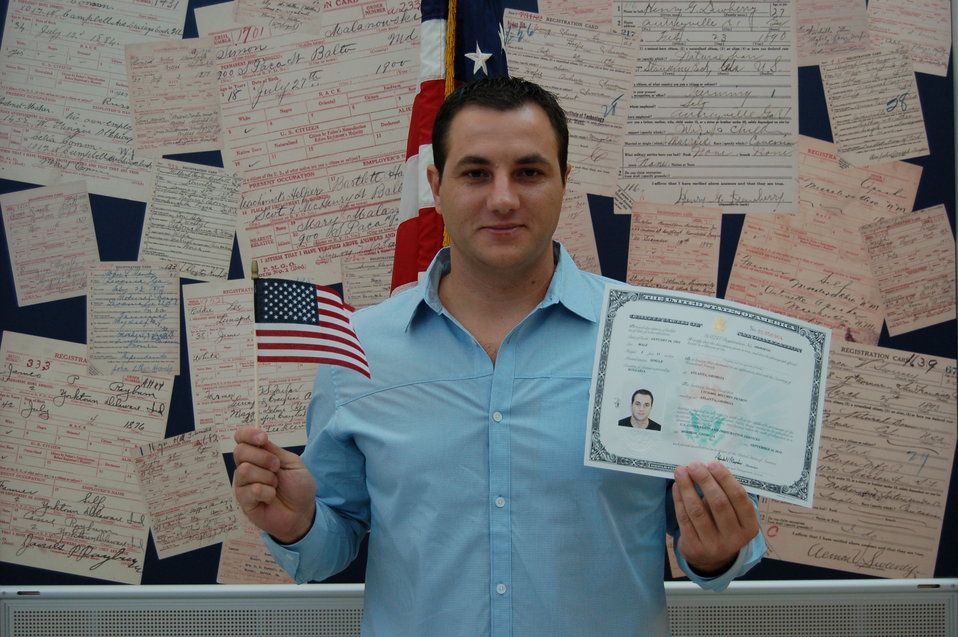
New Citizens